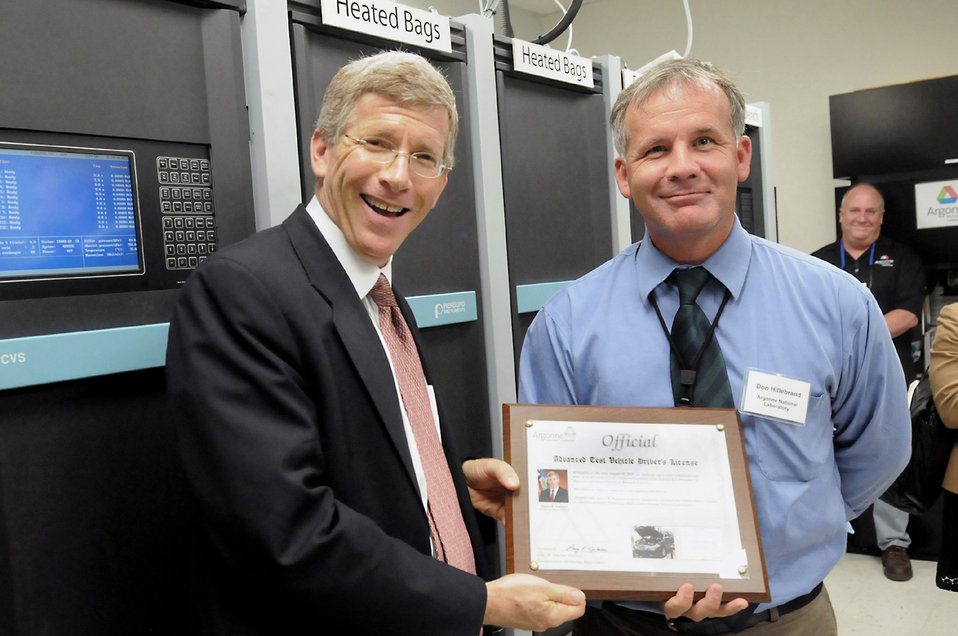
Deputy Secretary Poneman visits Argonne's Transportation Center

Deputy Secretary of Energy Daniel Poneman receives a memento from Don Hillebrand, Director of Argonne's Transportation Center.